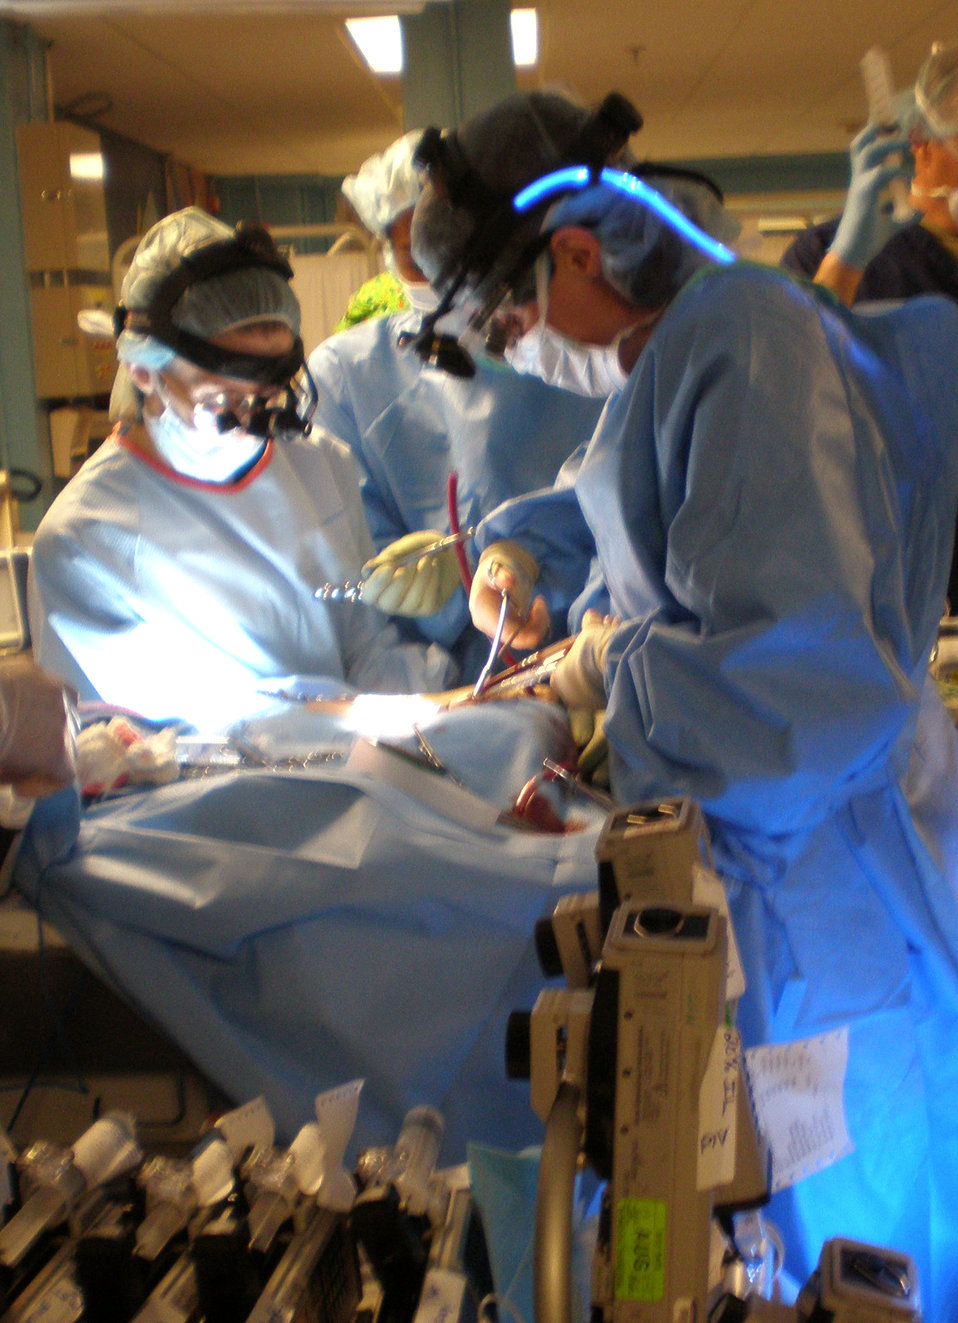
Joint team moves critically ill infants over holiday weekend

Dr. Mary Edwards (left to right) and Ford Brandon prepare a 9-month-old infant at U.S. Naval Hospital Okinawa, Japan, for a 15-hour flight to San Antonio May 25. A joint U.S. military team from several organizations helped move the infant, plus another, over the Memorial Day weekend to the continental United States for specialized care. Doctor Edwards is a Tripler Army Medical Center pediatric surgeon, and Mr. Brandon is a Wilford Hall Medical Center extracorporeal membrane oxygenation coordinator.